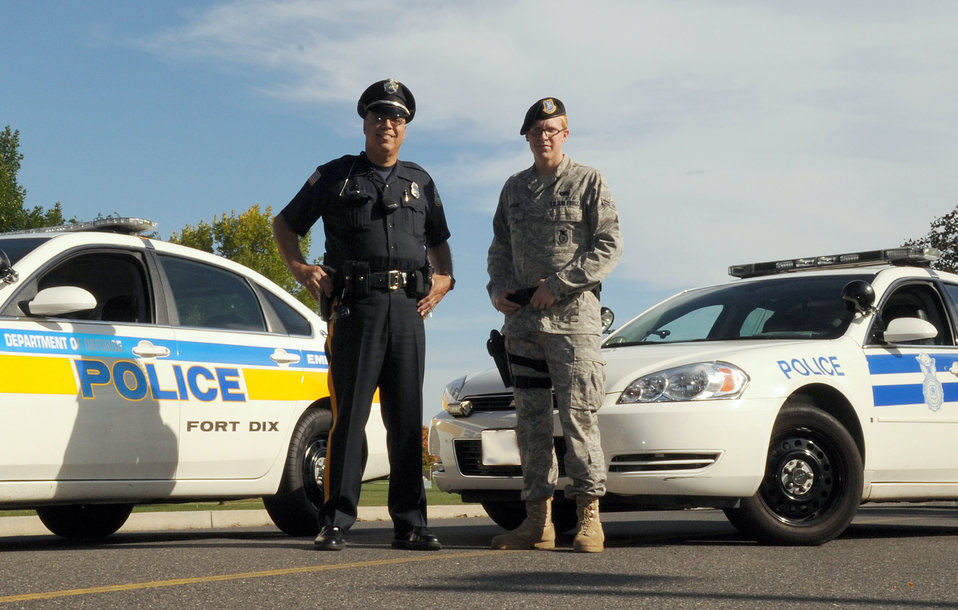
Policemen work together

Randall Calderon Sr., a Department of Defense police patrolman at Fort Dix, N.J., and Airman 1st Class Alexander McPeake, an 87th Security Forces Squadron patrolman at McGuire Air Force Base, N.J., work together to ensure the safety and security of Joint Base McGuire-Dix-Lakehurst, N.J.